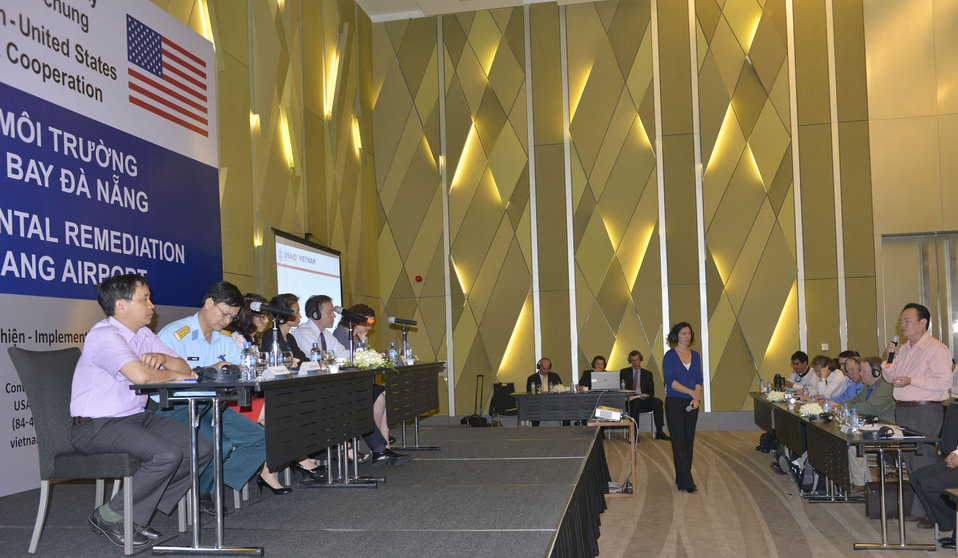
Community Outreach Session on Environmental Remediation of Dioxin Contamination at Danang Airport Project

Danang, March 25, 2014.